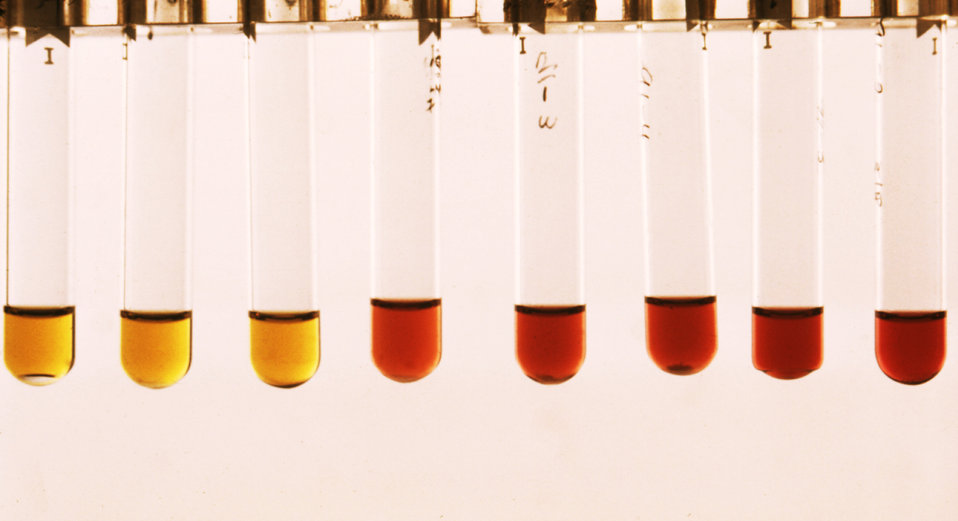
These are Mycoplasma broth tubes containing T-strain broth showing color changes.